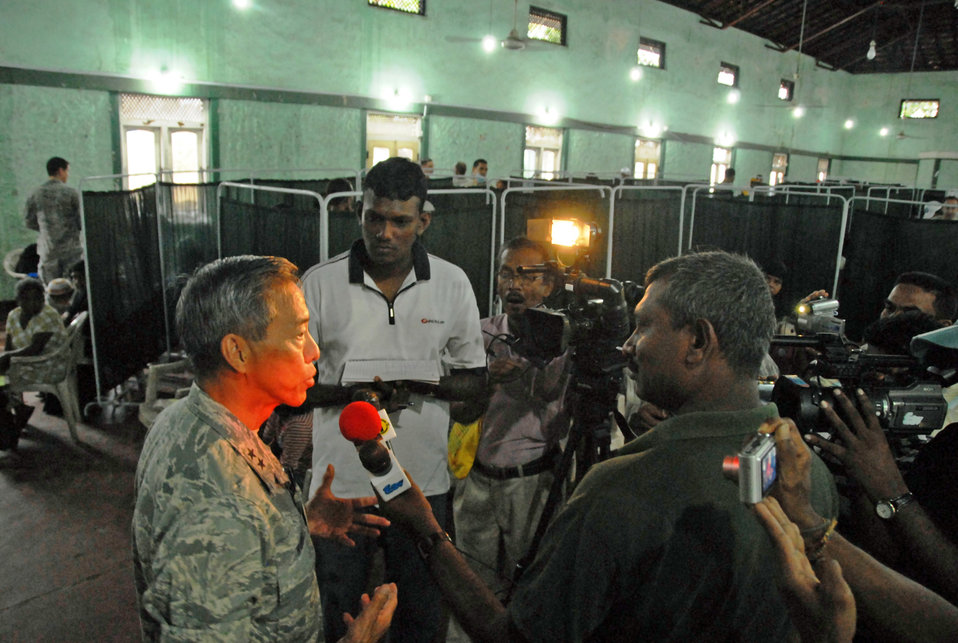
Operation Pacific Angel-Sri Lanka concludes

Maj. Gen. Darryll Wong talks to Sri Lanka media about the Pacific Angel -Sri Lanka mission Aug. 21, 2010, that took place in Sri Lanka, Aug. 14 through 22, 2010. Pacific Angel is a humanitarian and civic assistance program aimed at improving military and civic cooperation between the U.S. and countries throughout the Asia-Pacific region. General Wong is the Air National Guard advisor to Pacific Air Forces commander.